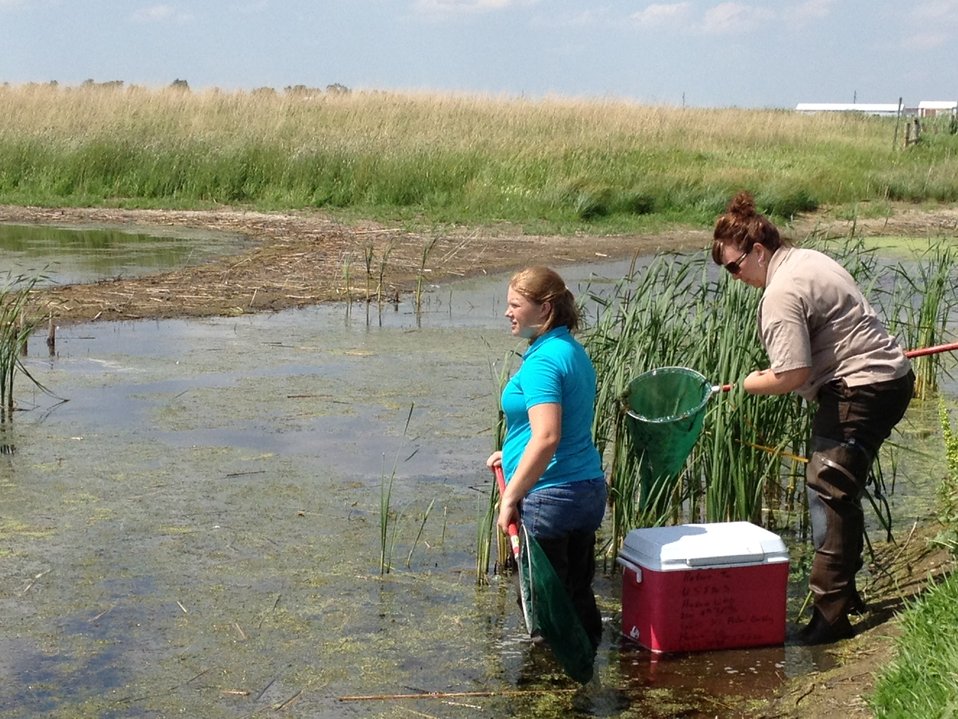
Invertebrate Collection

SCA Intern and USFWS staff collecting wetland bugs for an outreach event.